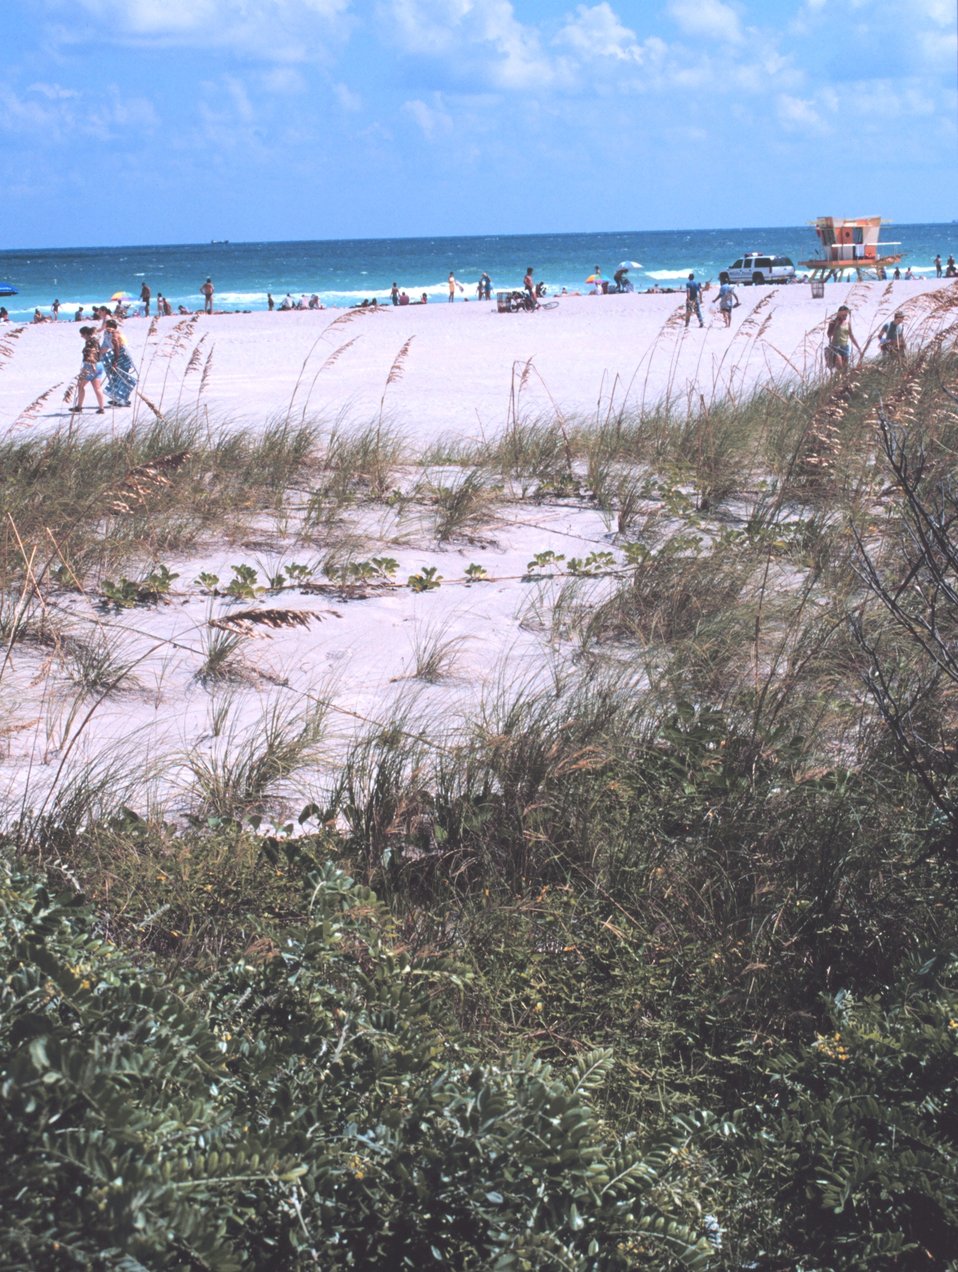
A view of the beach along the Atlantic Ocean